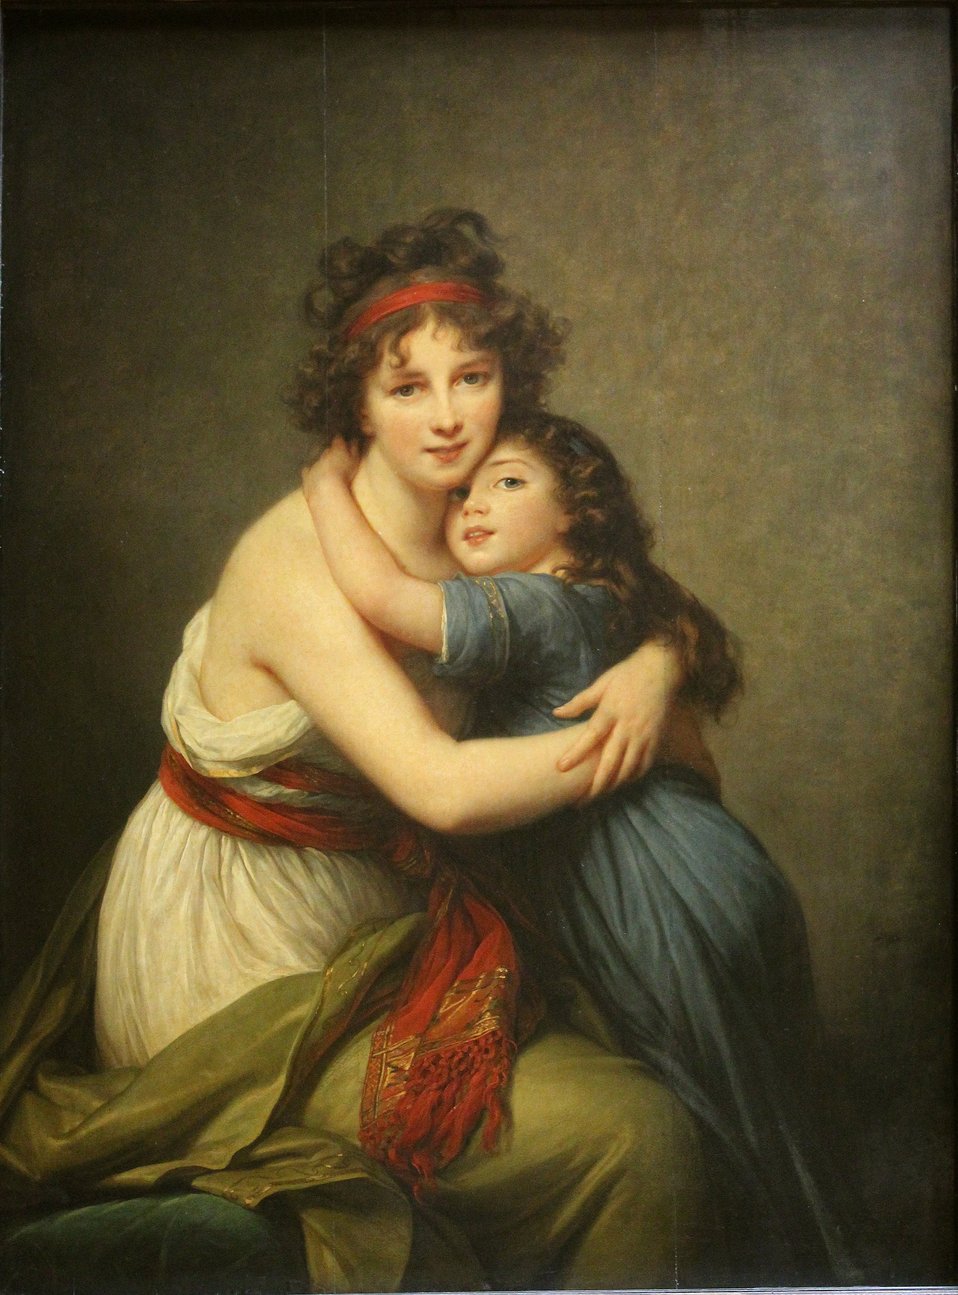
Lebr03